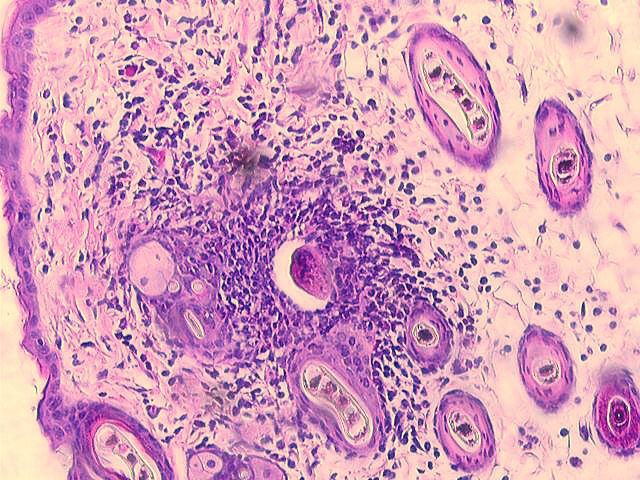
Dead schistosomulum in abdominal skin of a vaccinated mouse.